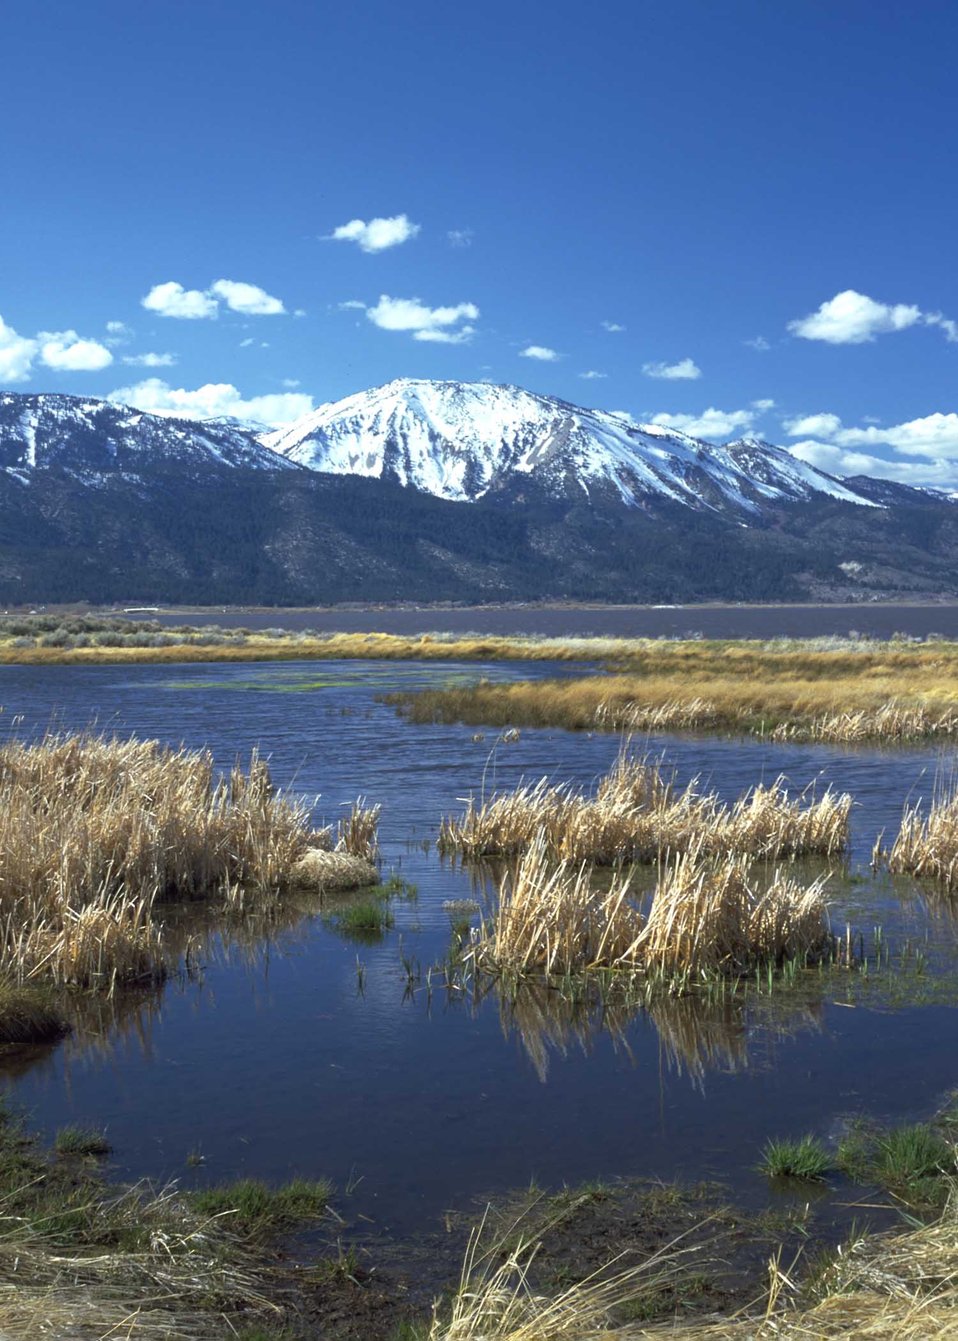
A landscape with a lake and mountains

View of Washoe Lake wetlands area, Slide Mountain in background, Washoe County, NV.